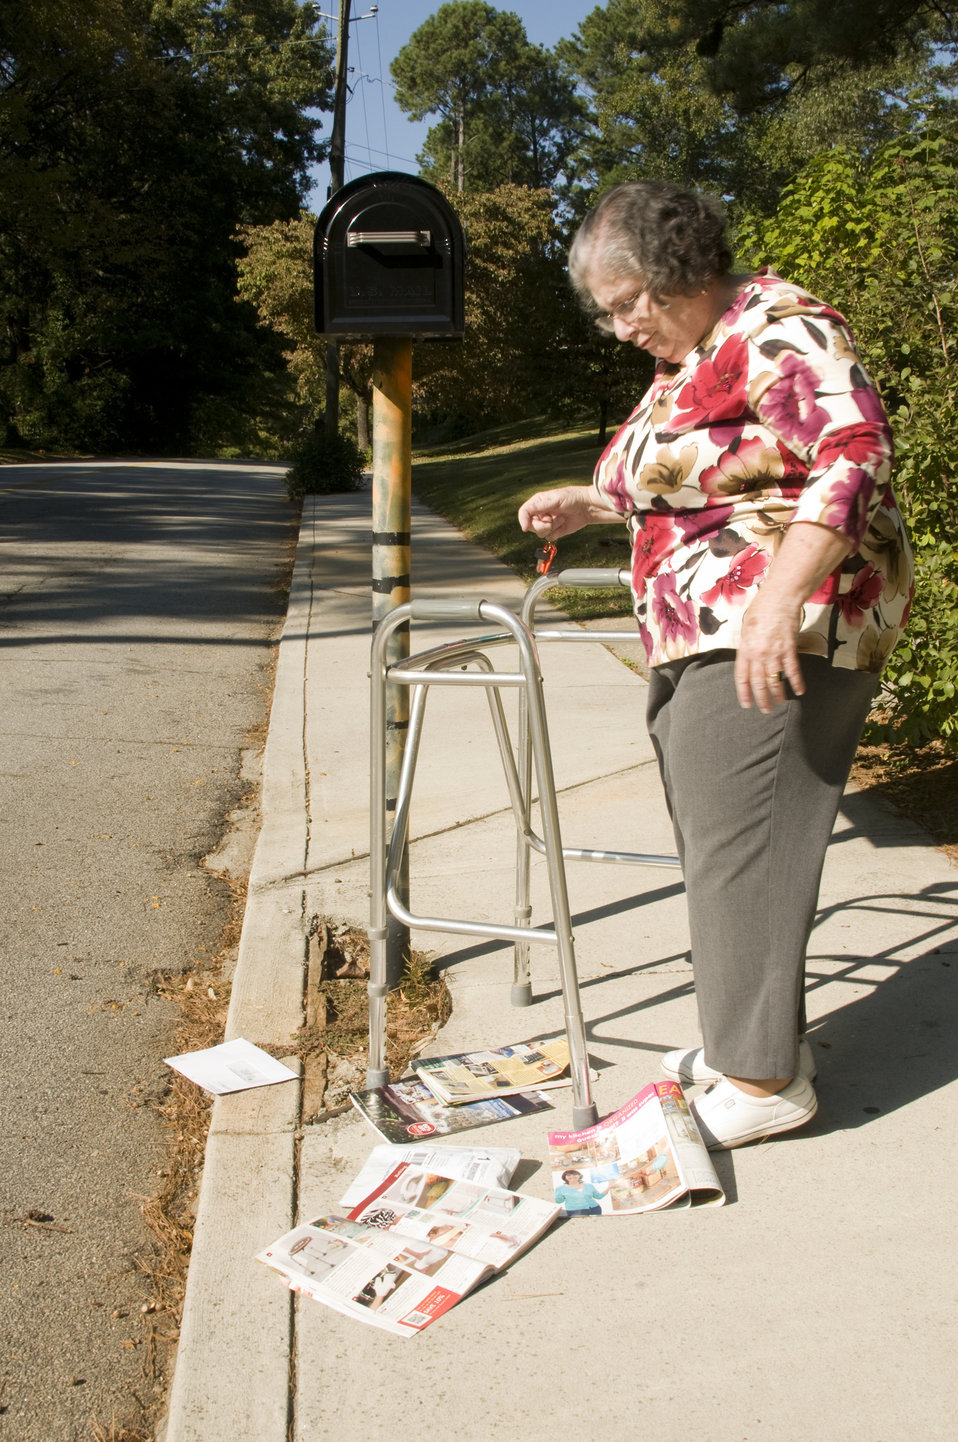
The woman pictured here is a rheumatoid arthritis patient, and is living with this disease, still doing her best to carry on with her day to day activities. With the help of her walker, she was shown retrieving her mail form a street-side mailbox, quickly perusing the newly delivered mailings before returning to her home. However, pictured here, she'd dropped the stack of letters to the ground, and would now have to pick them up. Given her arthritic condition, which made it difficult for her to bend over, picking up these scattered mailings would be a very slow and painful process.